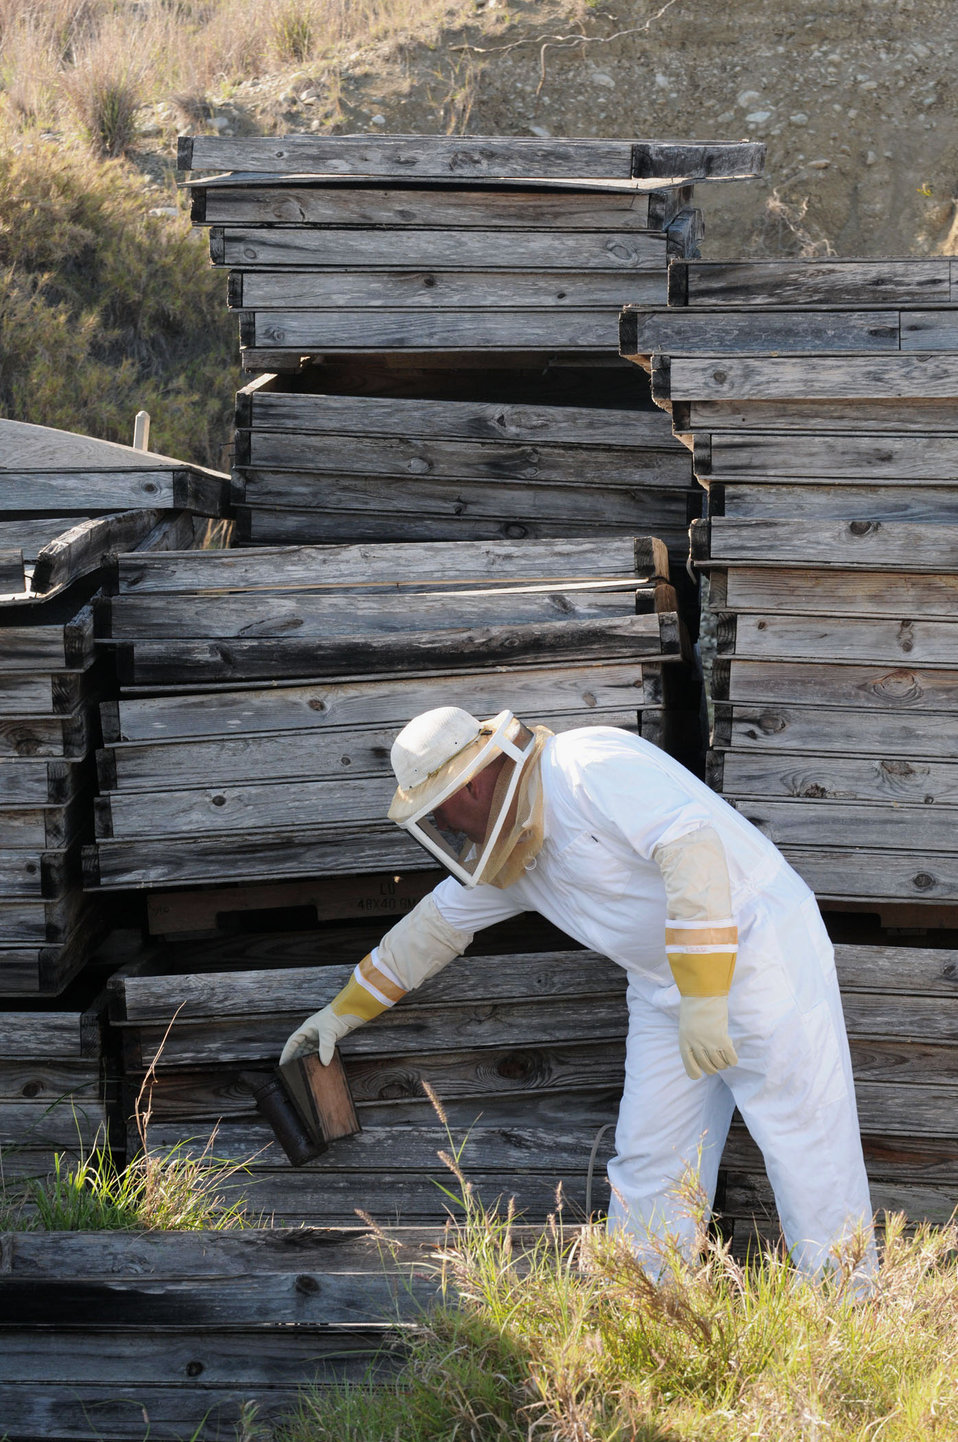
the bee's knees

Tech. Sgt. Rodney Buntyn calms a beehive with smoke as he prepares to move wooden frames from a work site April 2, 2010, at Guantanamo Bay, Cuba. The 474th Expeditionary Civil Engineer Squadron supports Joint Task Force Guantanamo by maintaining the Expeditionary Legal Complex and Camp Justice facilities and infrastructure power production craftsman with the Mississippi Air National Guard's 186th Civil Engineering Squadron, deployed to Joint Task Force Guantanamo with the 474th Expeditionary Civil Engineering Squadron,.